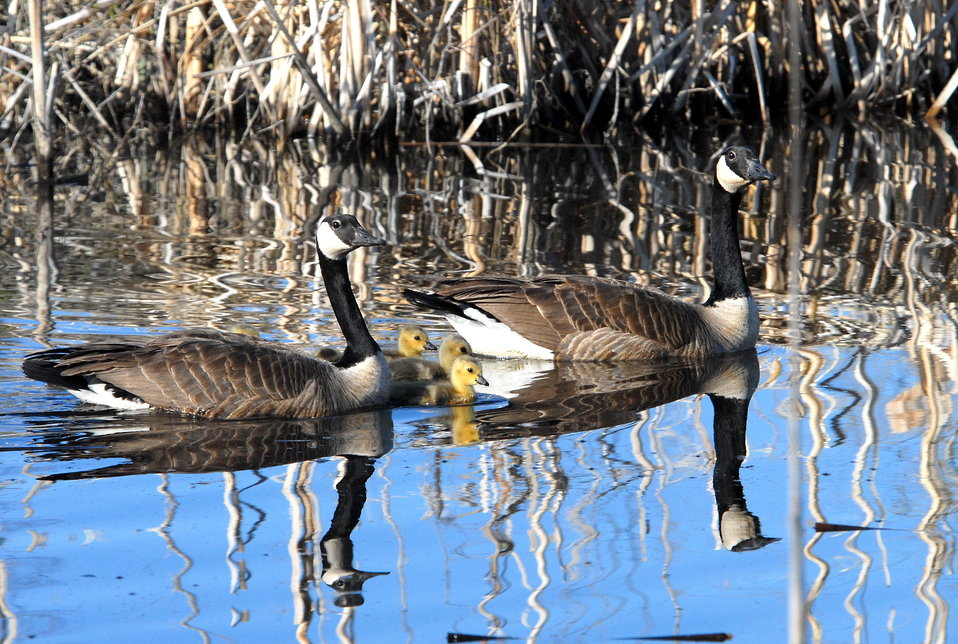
Canada Geese (brood)